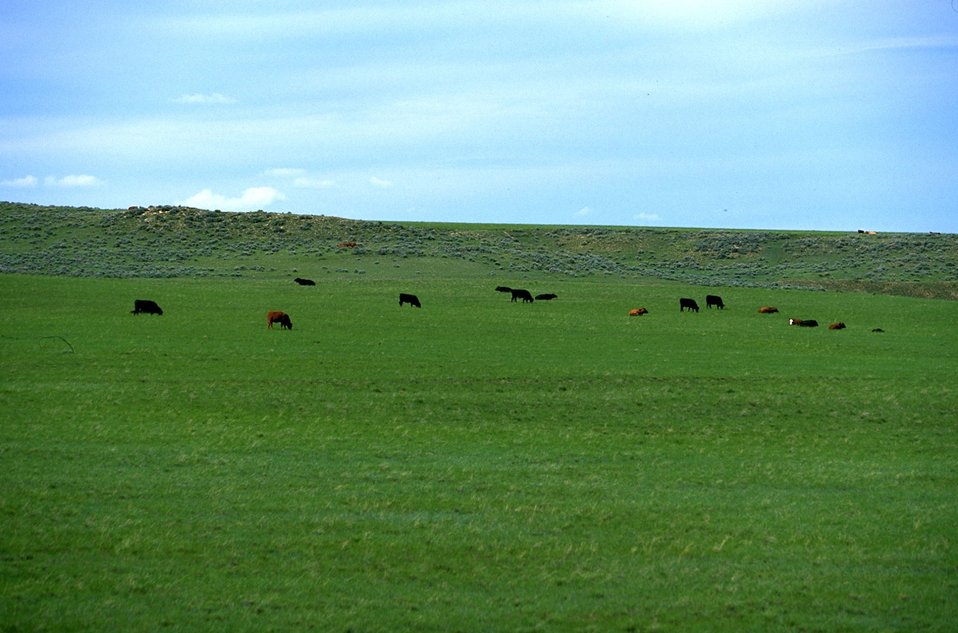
Cattle grazing on the prairies of Montana